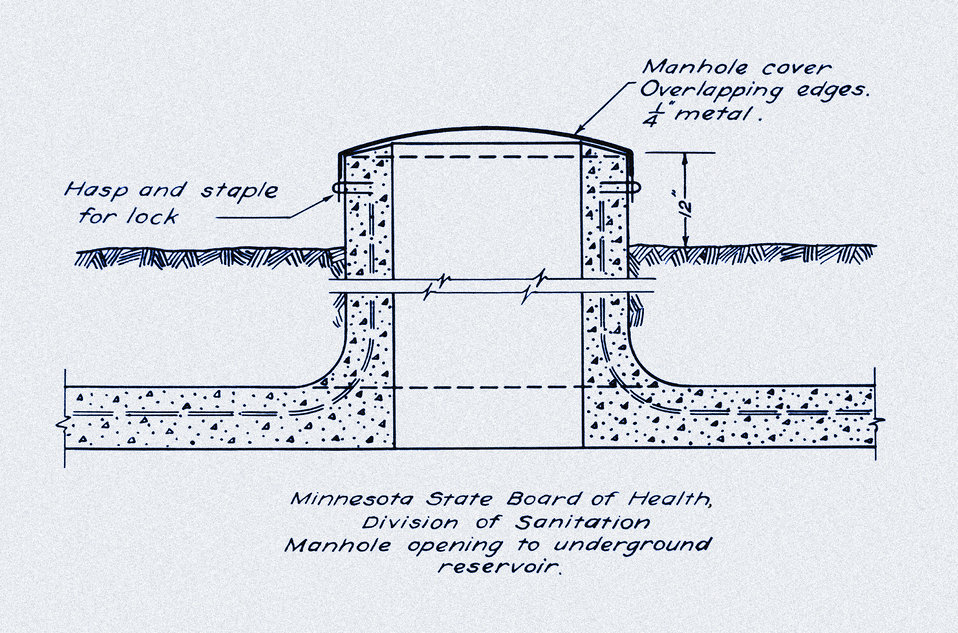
This historic 1919 diagram, which had been digitally enhanced and colorized, depicted a properly constructed man-hole cover intended to cover an underground reservoir.